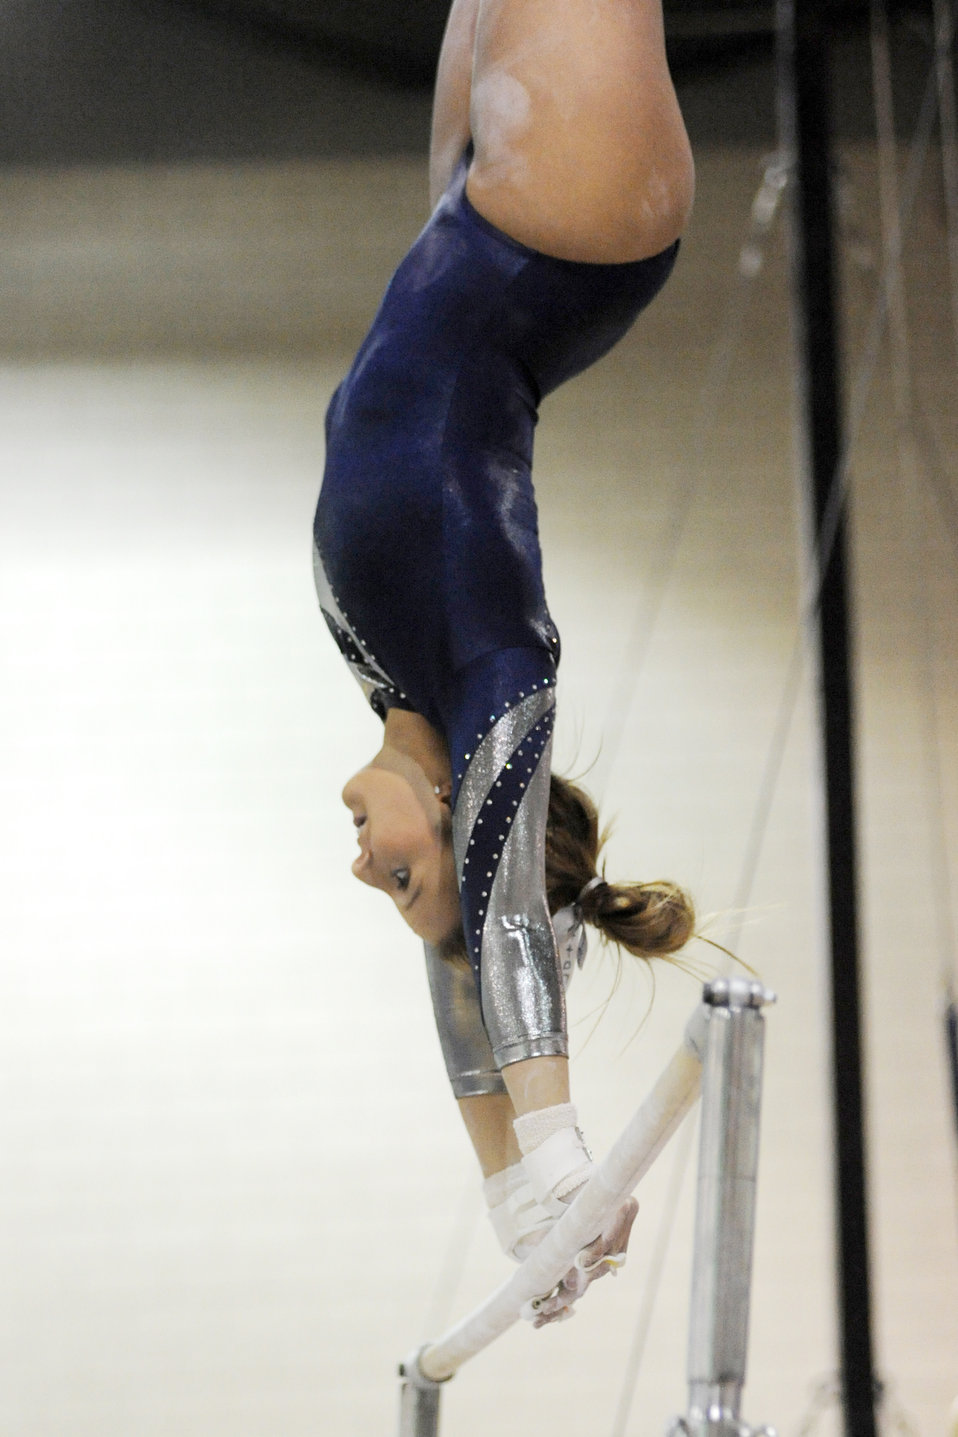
Women gymnasts compete in tri-meet

Falcon senior Aftan Boudreaux performs on the uneven bars during the home tri-meet against Southeast Missouri State and Seattle-Pacific in the U.S. Air Force Academy's Cadet Gym Feb. 20, 2010. Air Force placed second in the team competition with a score of 188.00. Southeast Missouri came in first with 194.05 and Seattle Pacific finished with 187.075.